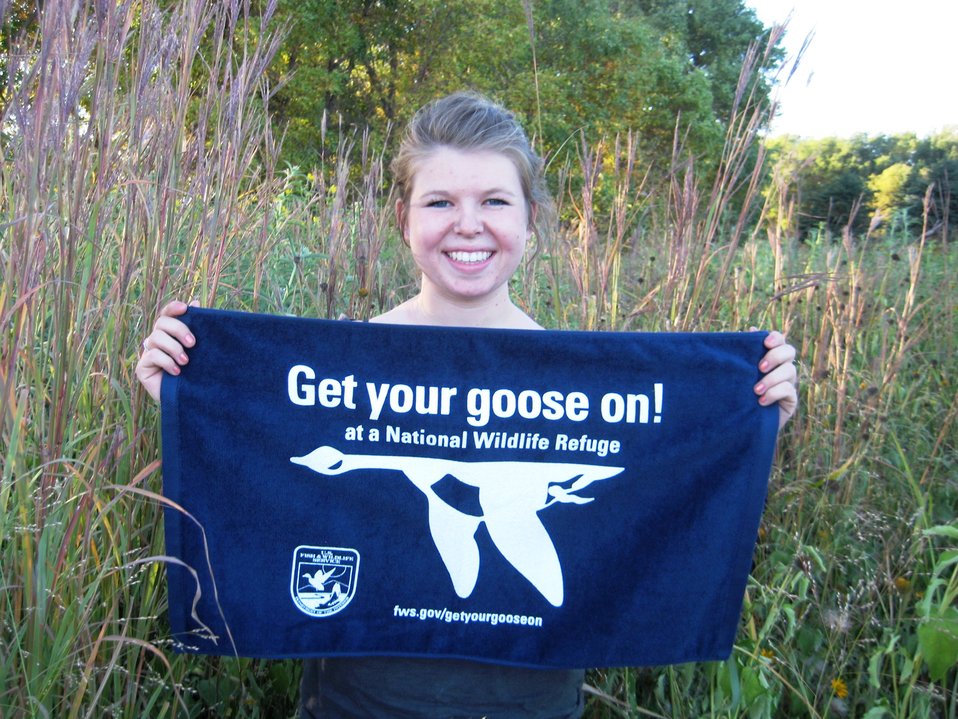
Get Your Goose On!

Taken at Tewaukon National Wildlife Refuge.